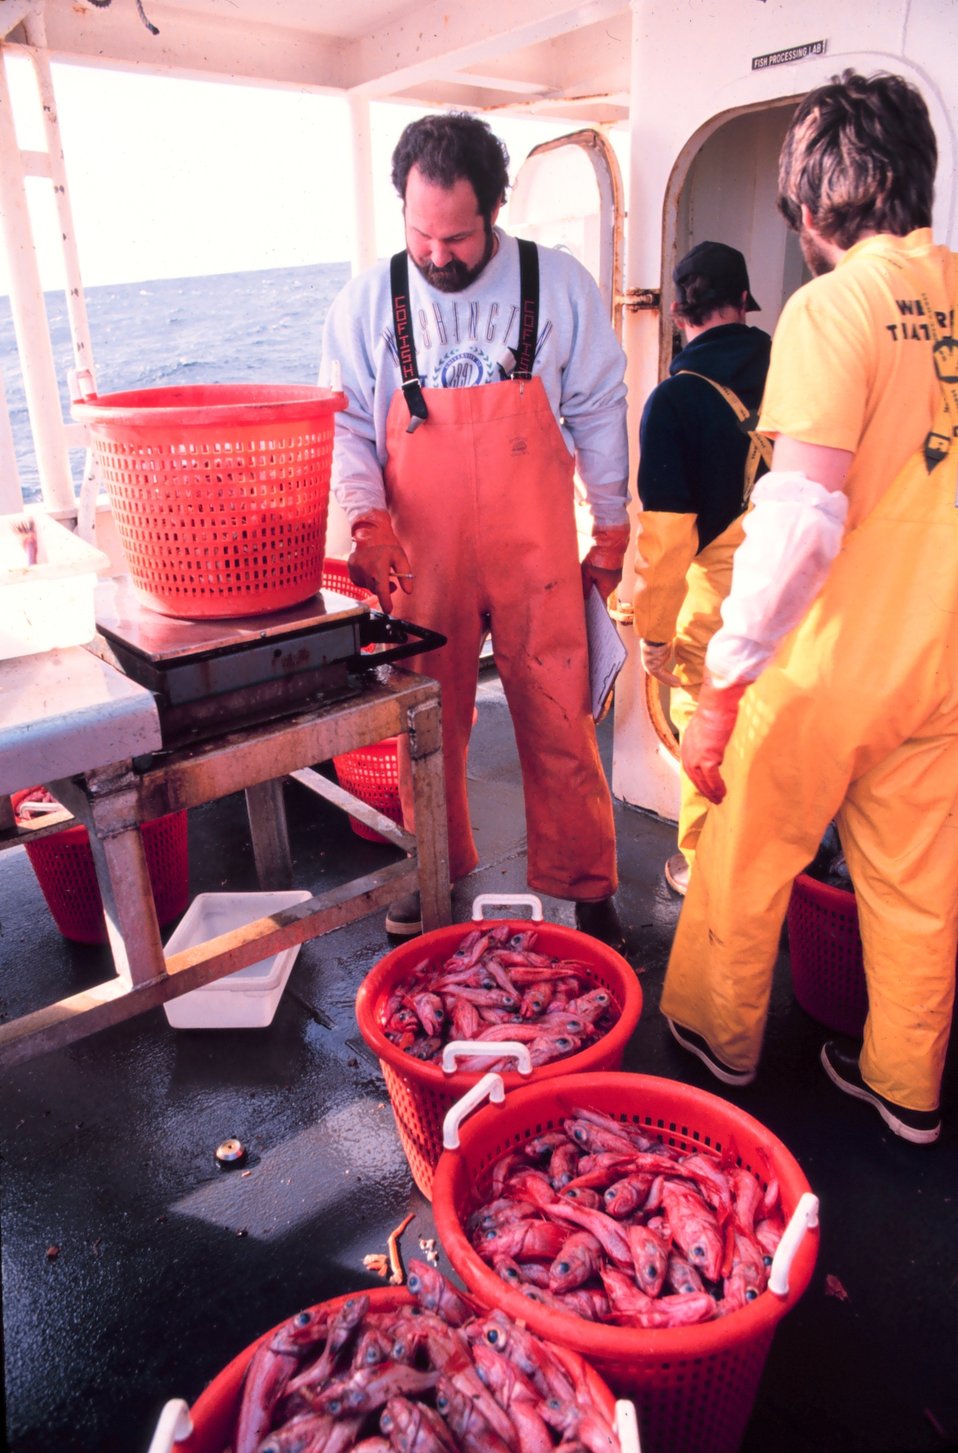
Weighing catch of redfish on the MILLER FREEMAN